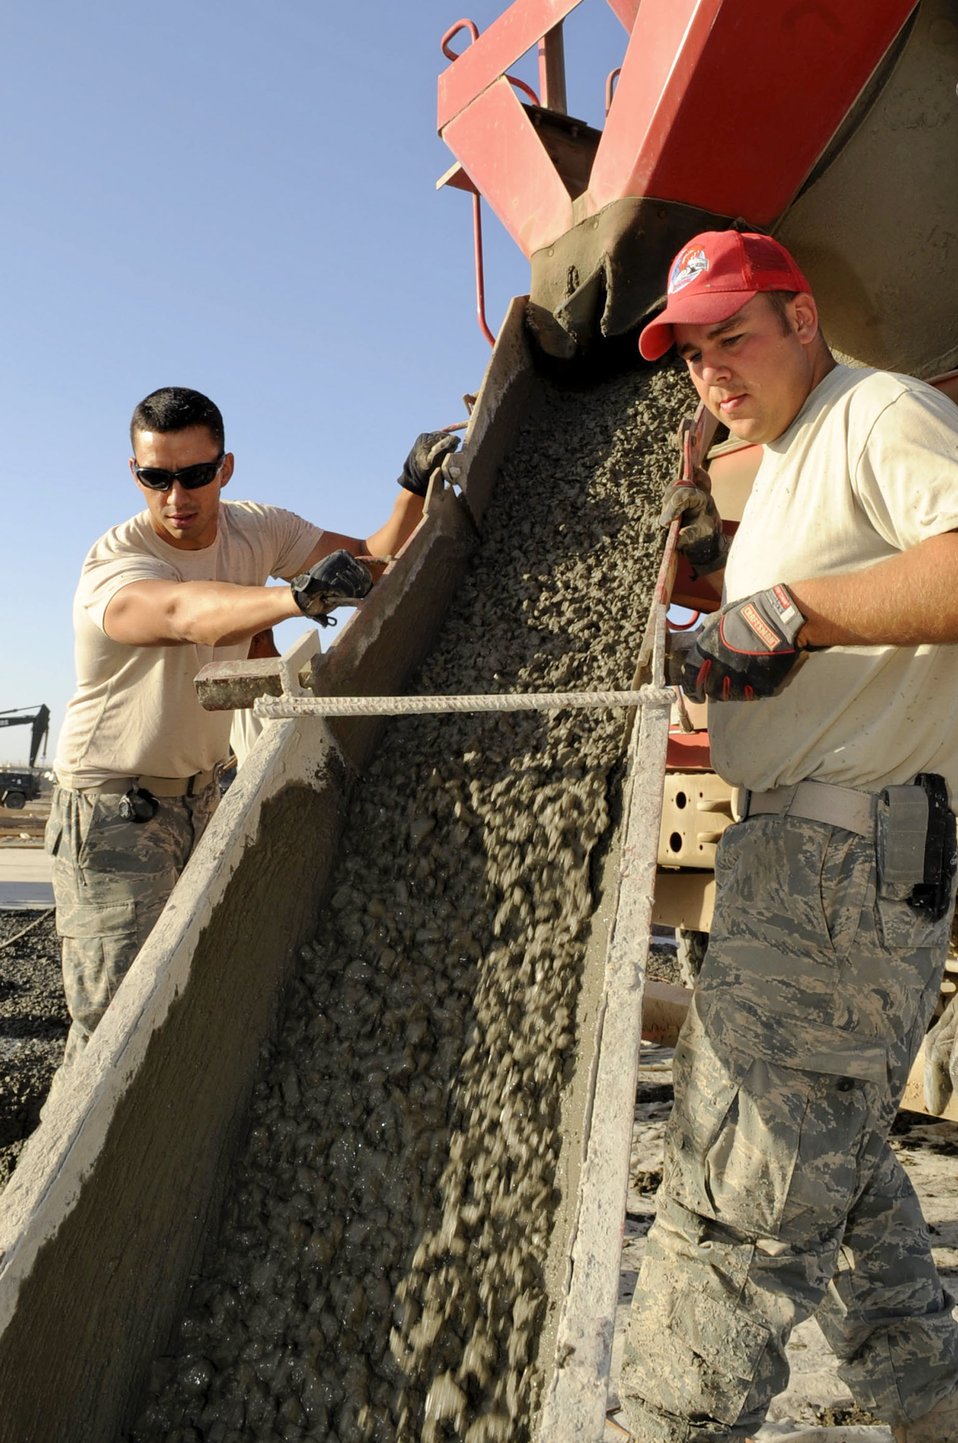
RED HORSE Airmen construct shelter pads

Airmen assigned to the 809th Expeditionary RED HORSE Squadron guide the chute as concrete is poured into the steel forms, creating large-area maintenance shelter pads May 15, 2010, at Kandahar Airfield, Afghanistan.